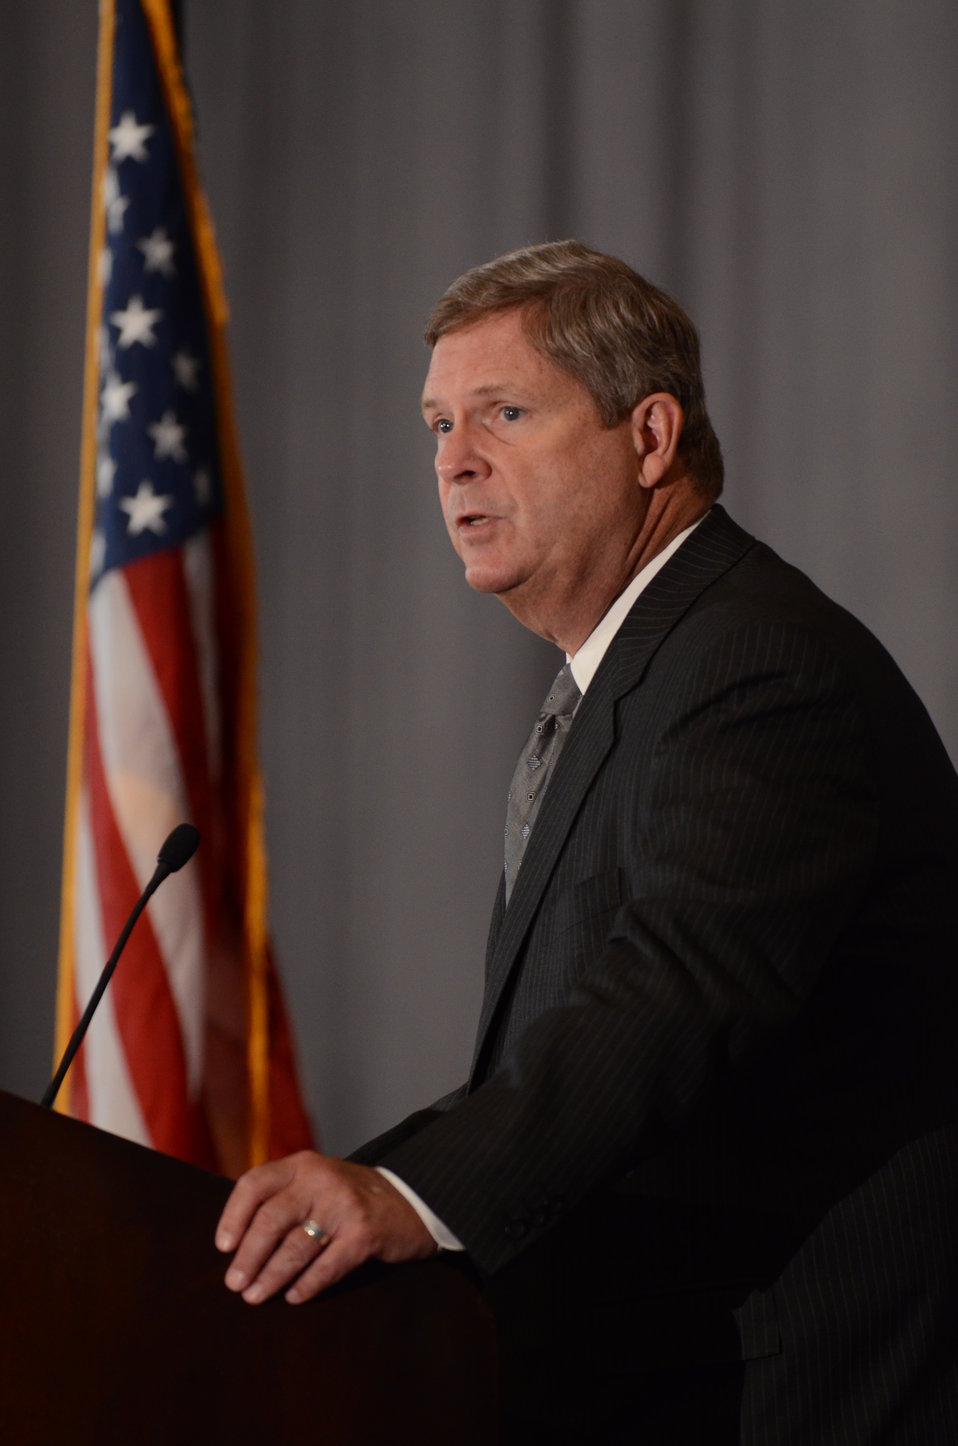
Agriculture Secretary Tom Vilsack speaks at the International Association for Food Protection (IAPP) 100th annual meeting in Milwaukee, WI, on Wednesday, August 3, 2011. IAPP is committed to providing members worldwide with a forum to exchange information on protecting the global food supply.